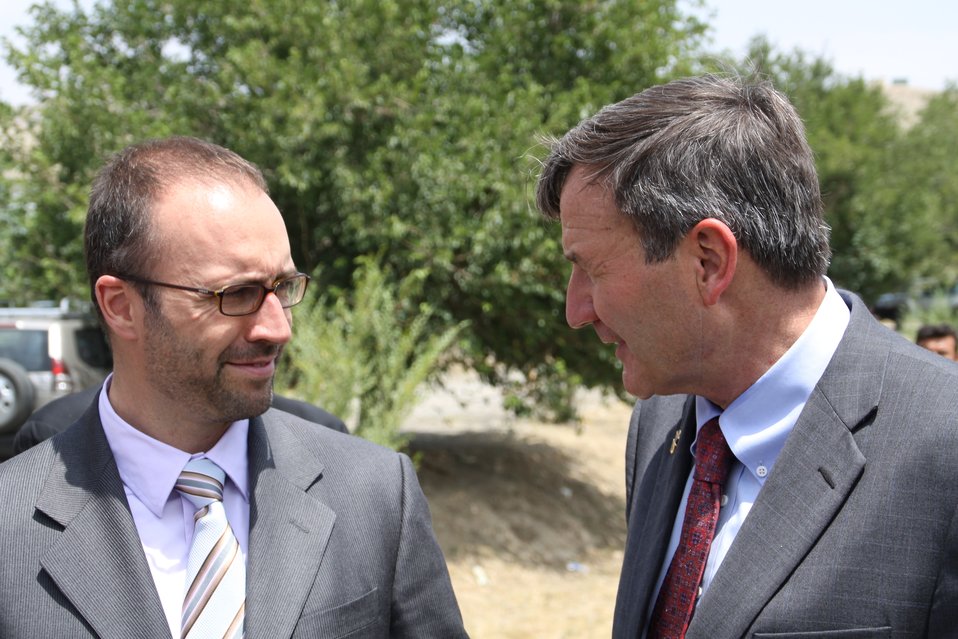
Badam Bagh Farm